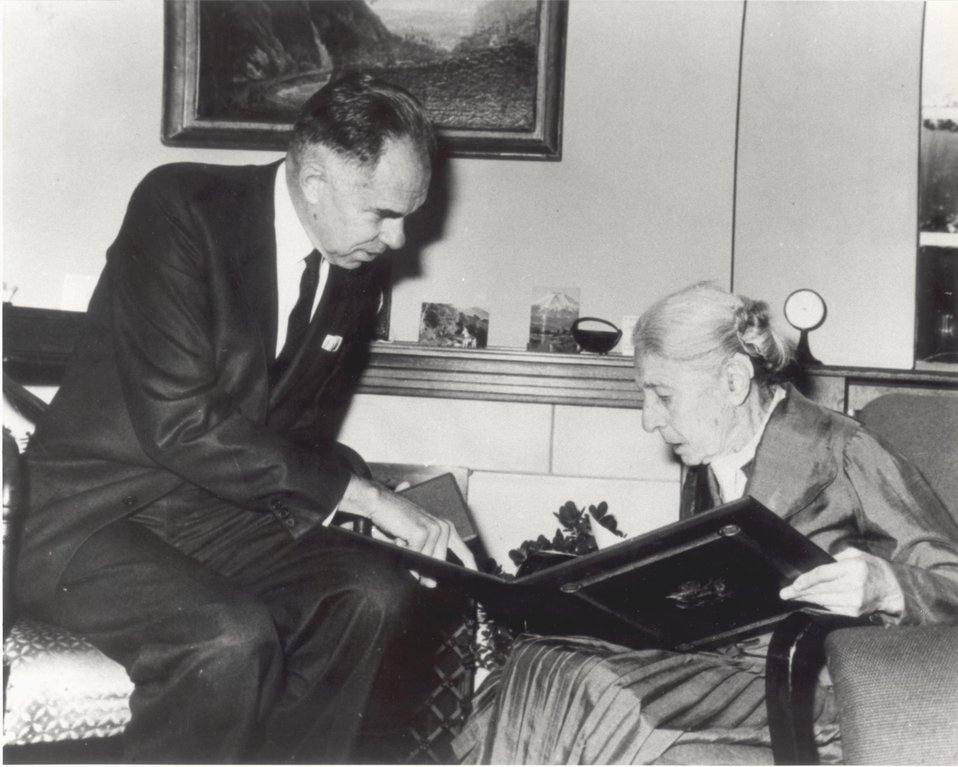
Dr. Lise Meitner being awarded the Fermi Award by AEC Chairman Glenn Seaborg.